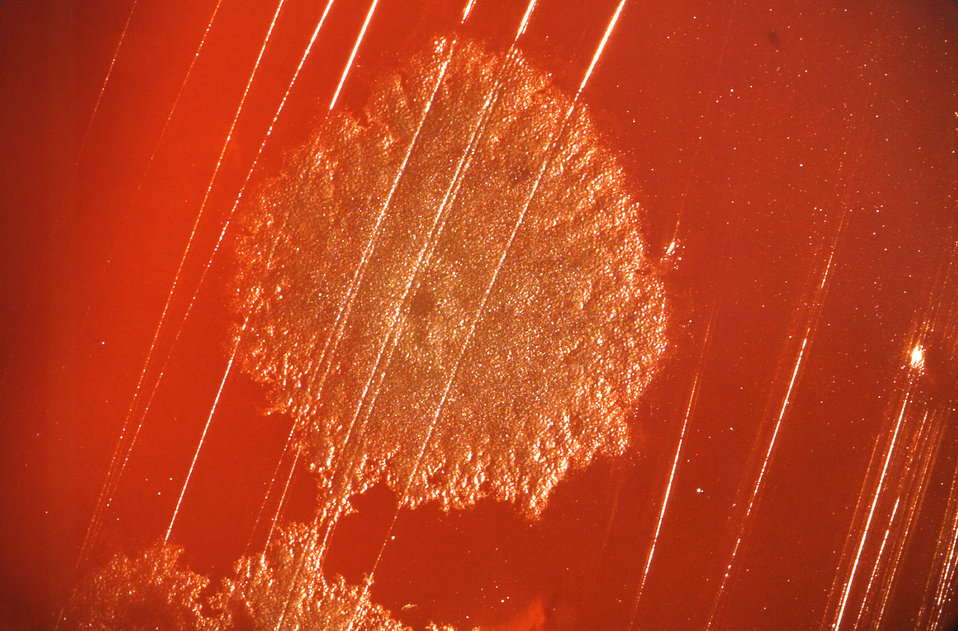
This photograph depicts a colony of Clostridium sp. Gram-positive bacteria, which had been grown on a 4% blood agar plate (BAP) over a 48 hour time period.